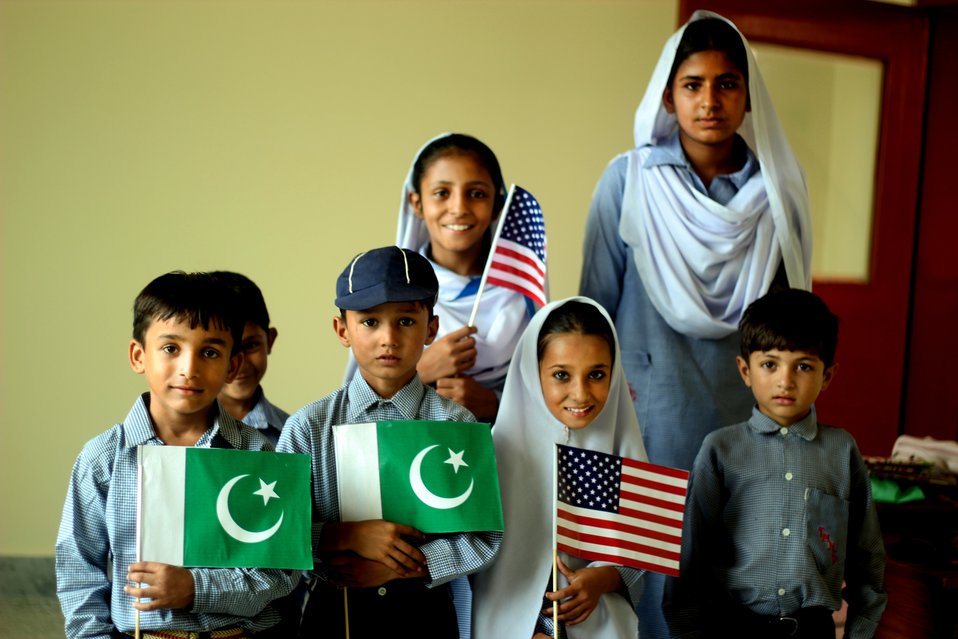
Children pose with US and Pakistan flags

Sept 06, 2012 : Construction (first and second floor) of Tameer-e-Millat Model School for Girls (TMMSG) in village Latwal, of Tehsil Fateh Jhang has been completed and on Sept 06, 2012 Project closing and School opening ceremony was held in which students, teachers, parents and community leaders participated.